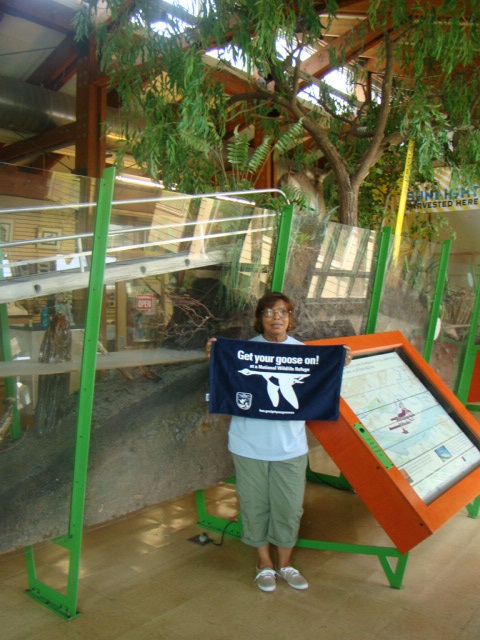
GYGO!

Volunteer Loraine Holmes at the Heinz Visitor Center.